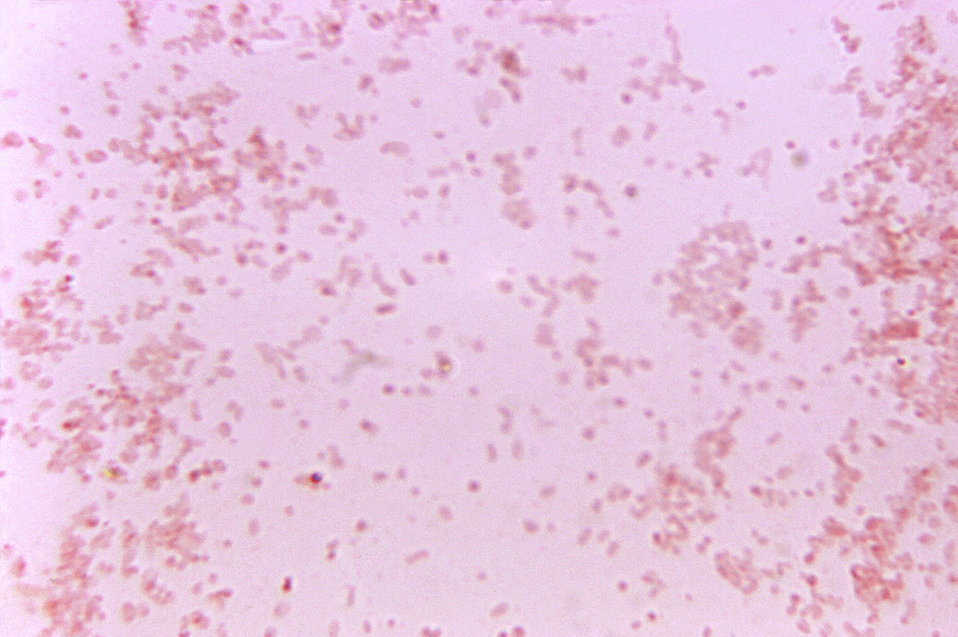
This photomicrograph shows Fusobacterium necrogenes after being cultured in a thioglycollate medium for 48 hours.